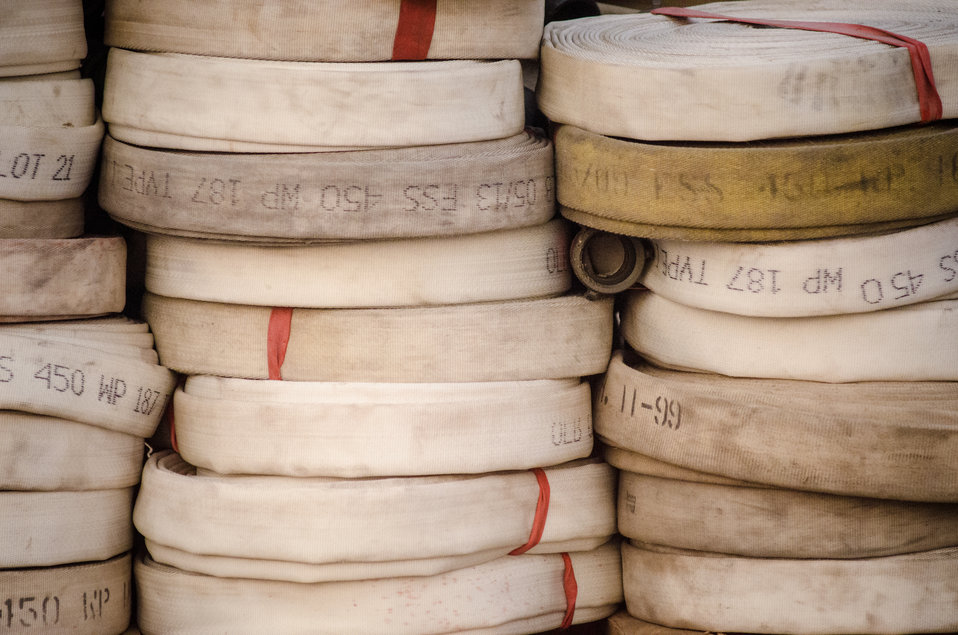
Used fire hoses that have passed inspection for serviceability, and have been mechanically wound, are organized according by type, diameter and length, then palletized for mobilization, or pickup by engine crews, during the Beaver Creek Fire, west of Hailey, ID, in the U.S. Department of Agriculture (USDA) Forest Service (FS) and Sawtooth National Forest and Bureau of Land Management (BLM), on Wednesday, Aug 21, 2013. Structure protection at the scale of this fire often threatens homes, infrastructure, sacred and historic locations, requiring the use of miles of hose to preposition hand lines (water hoses) in the event of fire fighting and for sprinklers to keep remote homes, structures surrounding areas wet.